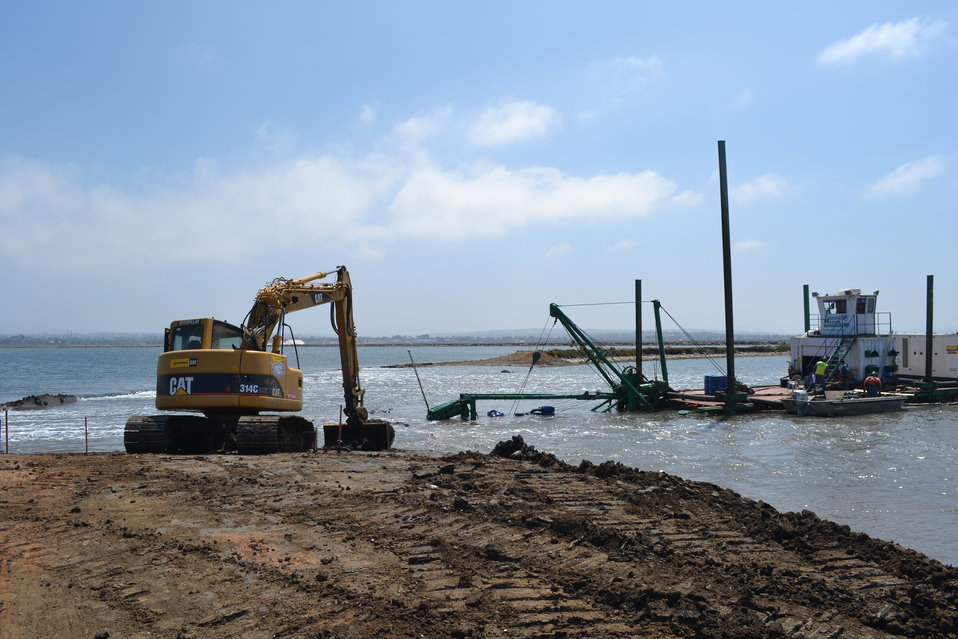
Final Breach of Pond 11 for the South San Diego Bay Coastal Restoration & Enhancement Project

The excavator on the left moved earth while the dredge on the left, carved a smoother channel at precise elevations. (Lisa Cox/USFWS)
www.fws.gov/sandiegorefuges/Western Salt Ponds Rest...